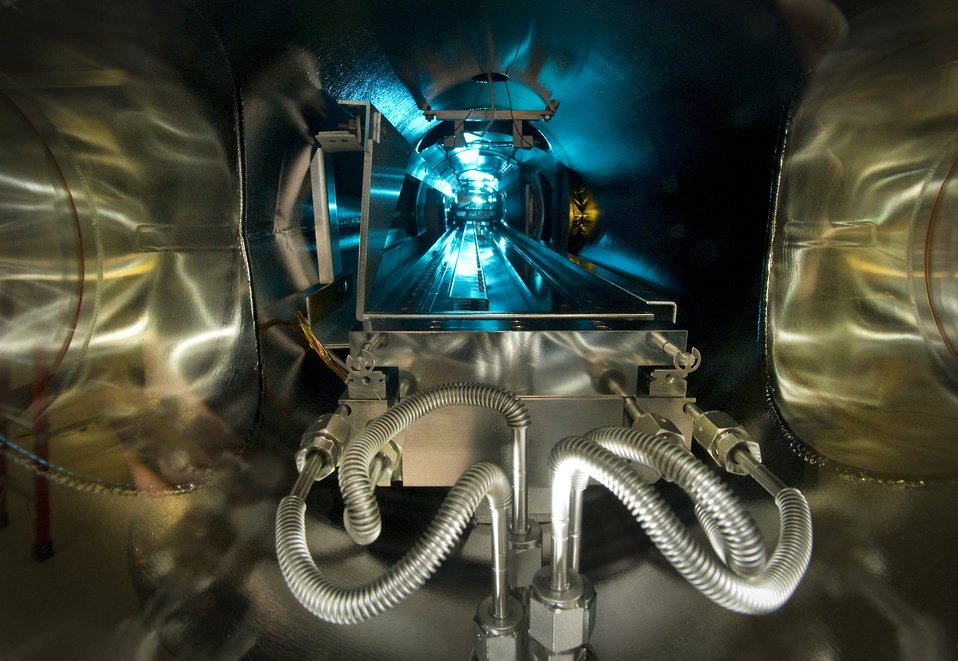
Shown is the inside view of a custom-built machine that makes atomically precise lenses that focus x-ray beams to within a single nanometer at Brookhaven National Laboratory.

Inside this chamber, substrates travel along that central track and collect plasma-borne particles that form the lenses (a technique called sputter deposition). Once the completed materials are etched down to the proper size, they will be precisely designed to work with Brookhaven's forthcoming National Synchrotron Light Source II.